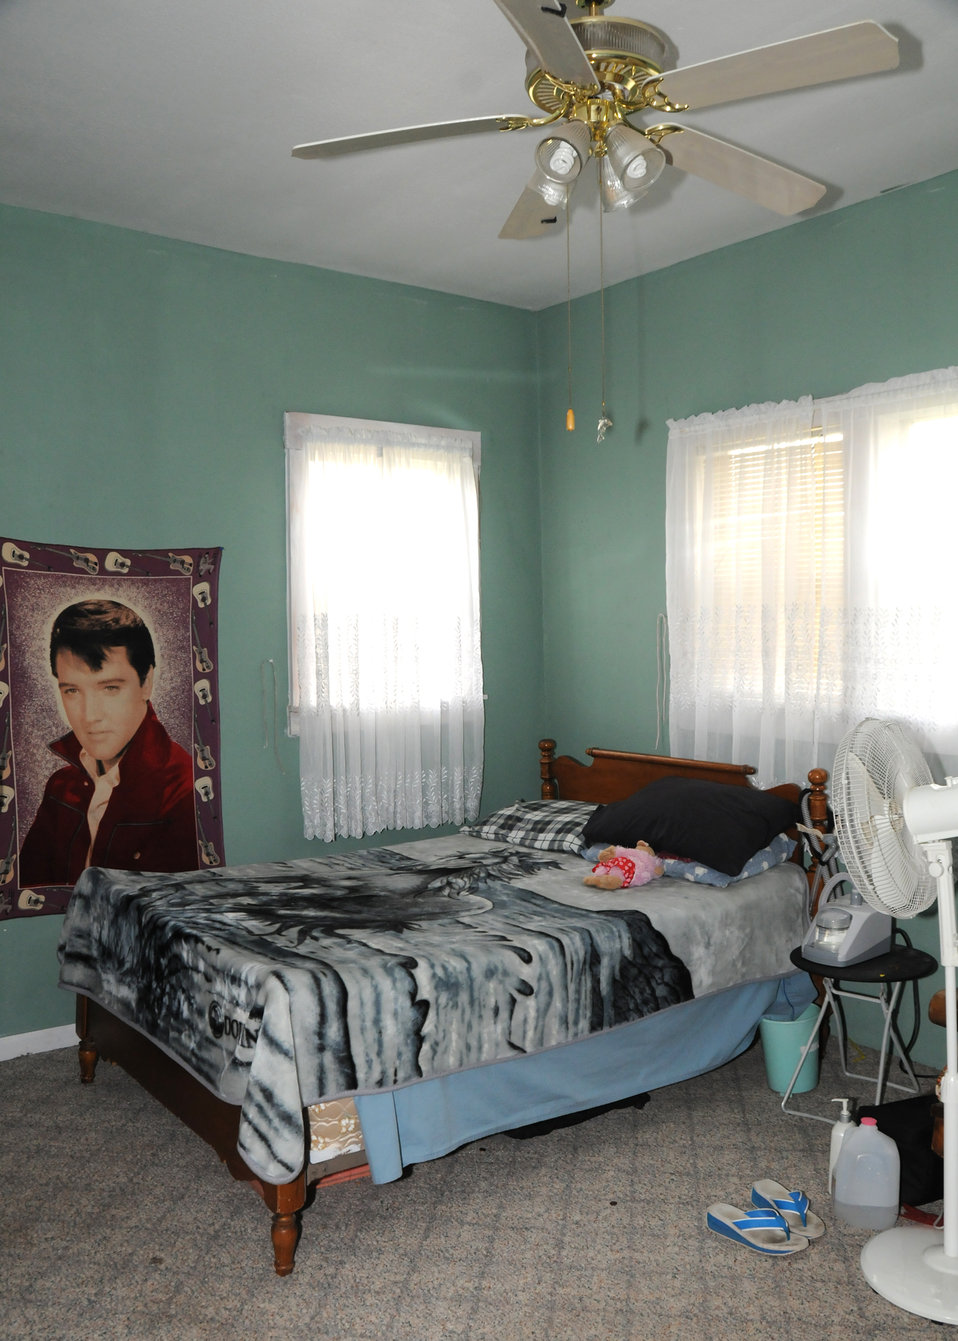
Ms. Shirley Ford's bedroom in her home in Hollis, Oklahoma.